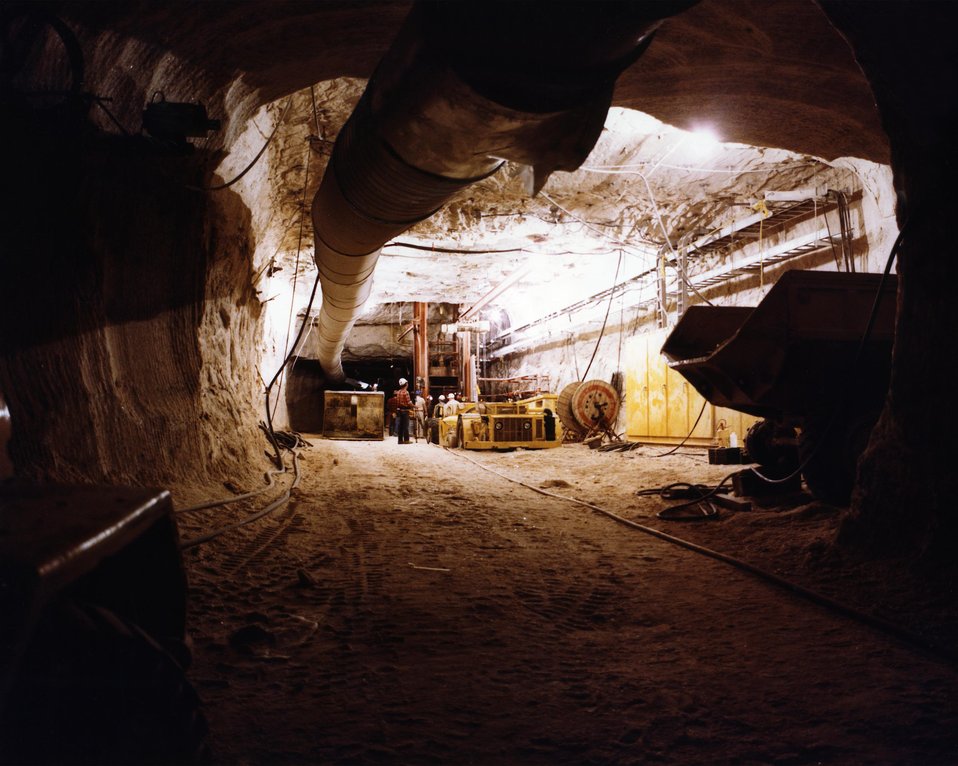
VIEW OF MAIN DRIFT LOOKING NORTH TOWARD STATION AT 2,150 FOOT LEVEL.

THE WASTE ISOLATION PILOT PLANT IS A DOE RESEARCH AND DEVELOPMENT FACILITY FOR DEMONSTRATING THE SAFE DISPOSAL OF TRANSURANIC RADIOACTIVE WASTES. TEST SHAFTS HAVE BEEN DRILLED TO A DEPTH OF 2,100 FEET. THE SHAFTS, ONE 6 FEET IN DIAMETER AND THE OTHER 12 FEET IN DIAMETER, PROVIDE AN ENTRY PASSAGE AND VENTILATION TO THE UNDERGROUND SALT ROCK FORMATION THAT IS BEING TESTED TO DETERMINE ITS SUITABILITY FOR RADIOACTIVE WASTE STORAGE.